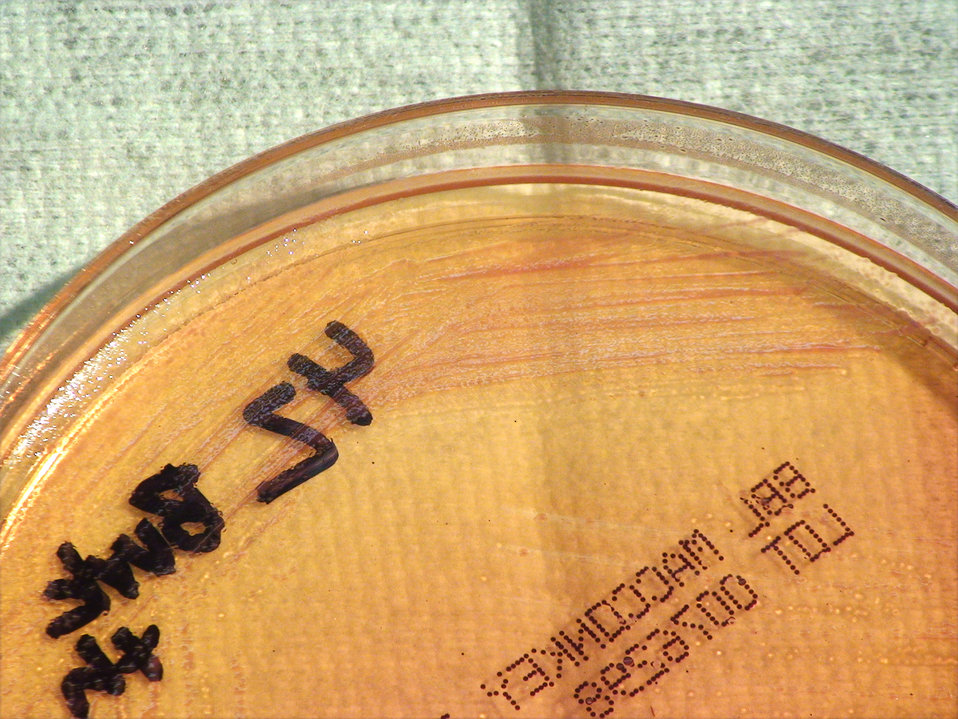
A closer view of PHIL 12427, this photograph depicts the colonial morphology displayed by Gram-negative Burkholderia thailandensis bacteria, which was grown on a medium of MacConkey agar, for a 24 hour time period, at a temperature of 42�C. Also, see both PHIL 12405 and 12406, for views of this bacterial specie, grown on the same medium, but at a lesser temperature (37�C), and at twice the amount of time (48hr). Note that PHIL 12410 and 12411 depict the same bacterial specie grown on the same media, and temperature (42�C), but a greater time period (48hr). Finally, take a look at PHIL 12419 and 12420 depicting colonial growth, on the same medium, and for the same amount of time (24hr), but at a lesser temperature (37�C).